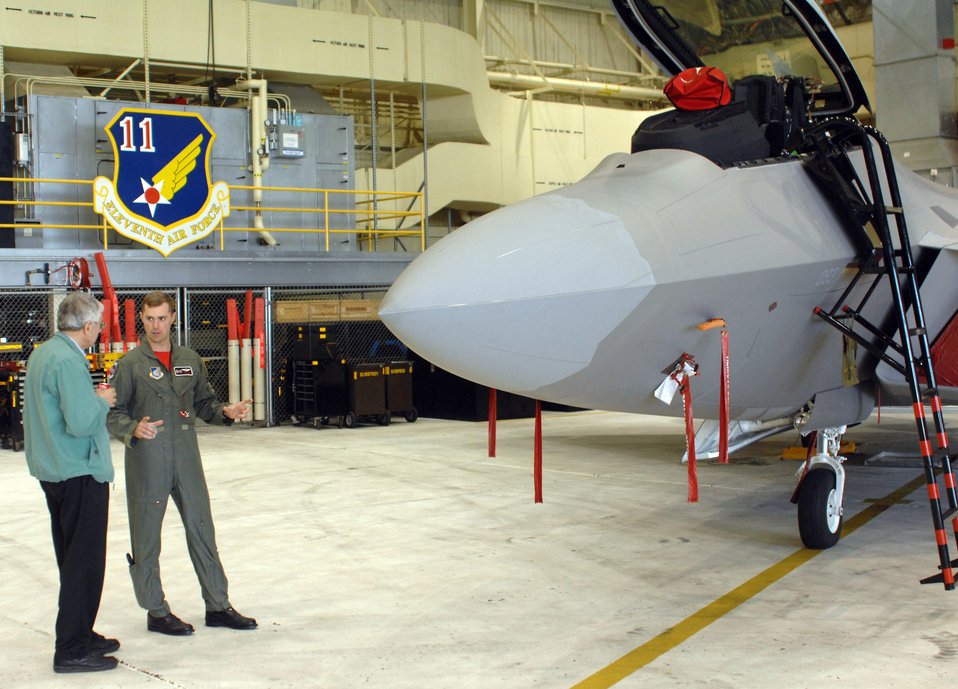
Air Force fighter squadron celebrates 90th

Maj. Dave Elliott talks about the being a member of the 90th Fighter Squadron with Ted Parsons Aug. 17 at Elmendorf Air Force Base, Alaska. Mr. Parsons was assigned to the then-90th Tactical Fighter Squadron in 1974 when its home station was Clark Air Base, Philippines.